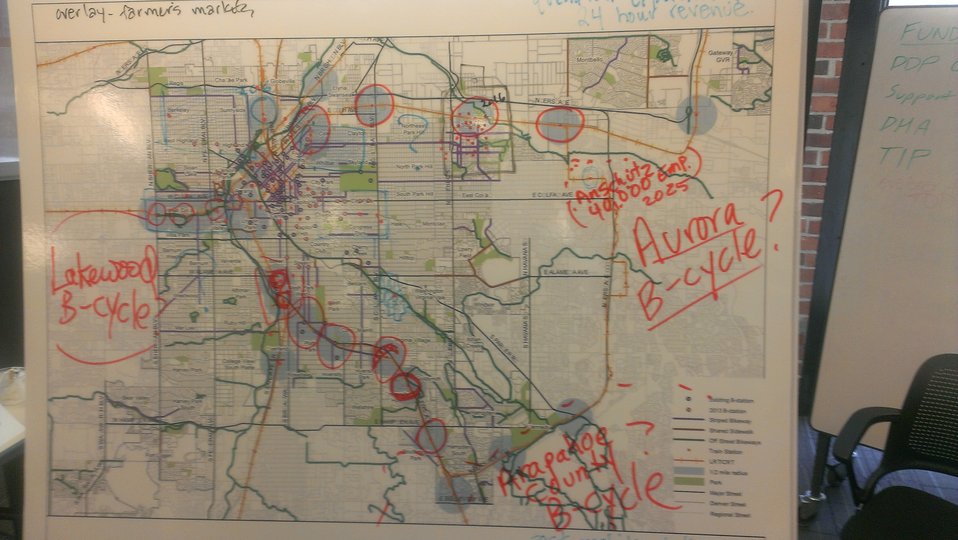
Denver Bikeshare Workshop Map

In #Denver, we helped community members expand their existing #BikeShare program. #BikeToWork